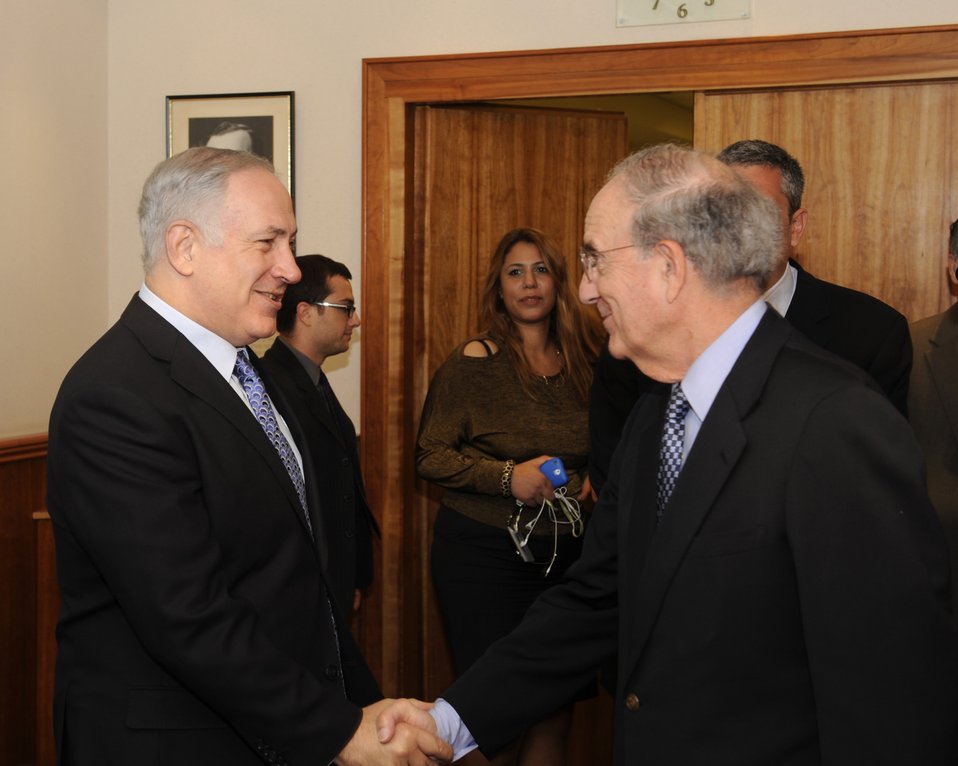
Special Envoy Mitchell Shakes Hands With Israeli Prime Minister Netanyahu

Special Envoy for Middle East Peace George Mitchell shakes hands with Israeli Prime Minister Binyamin Netanyahu at the Prime Minister’s office in Jerusalem on May 20, 2010.